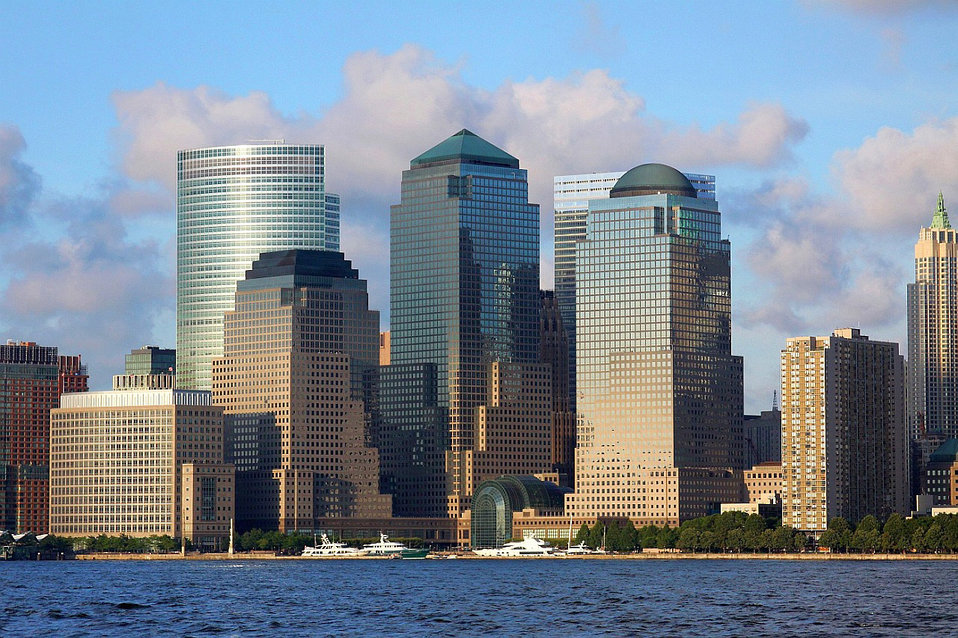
Business district

Part of ny downtown.